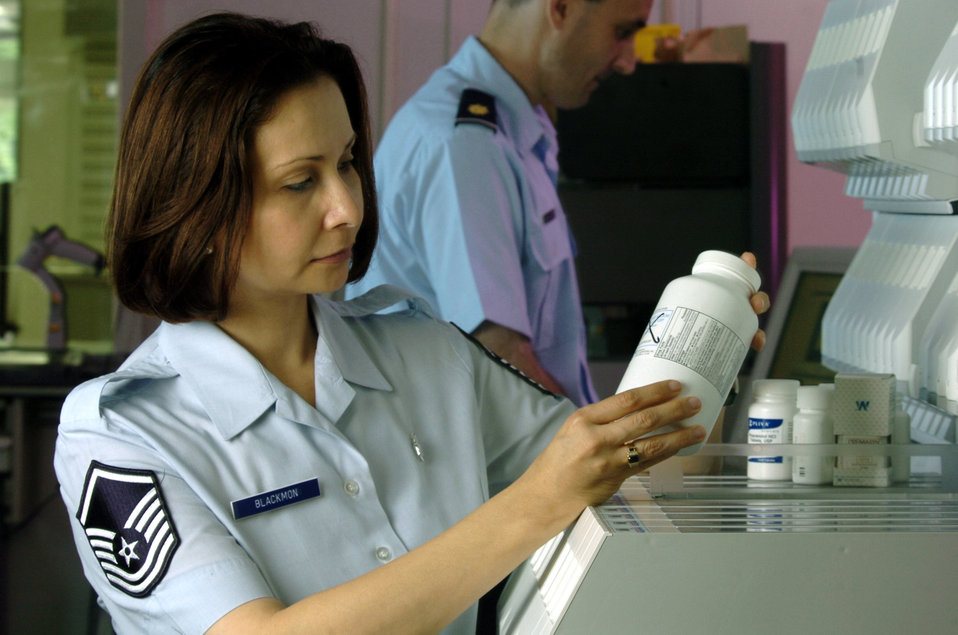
Yokota pharmacy ensures a mission-ready force

YOKOTA AIR BASE, Japan -- Master Sgt. Jazmina Blackmon inspects the expiration date on bottle of tablets before refilling an automatic medication dispenser here. She is the 374th Medical Group's noncommissioned officer in charge of the pharmacy. The pharmacy staff handled more than 84,000 prescriptions last year.